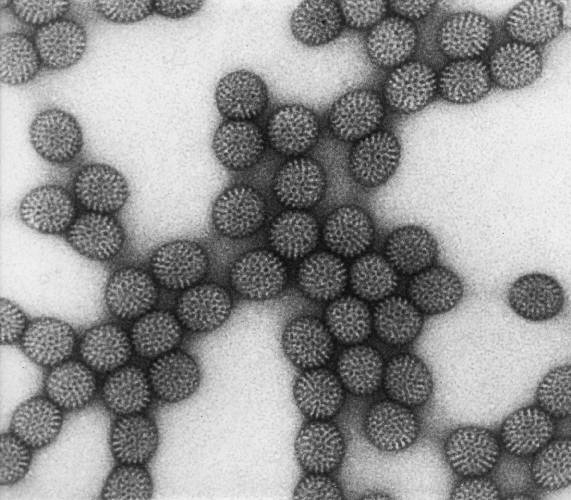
This transmission electron micrograph (TEM) revealed the presence of a number of rotavirus virions.